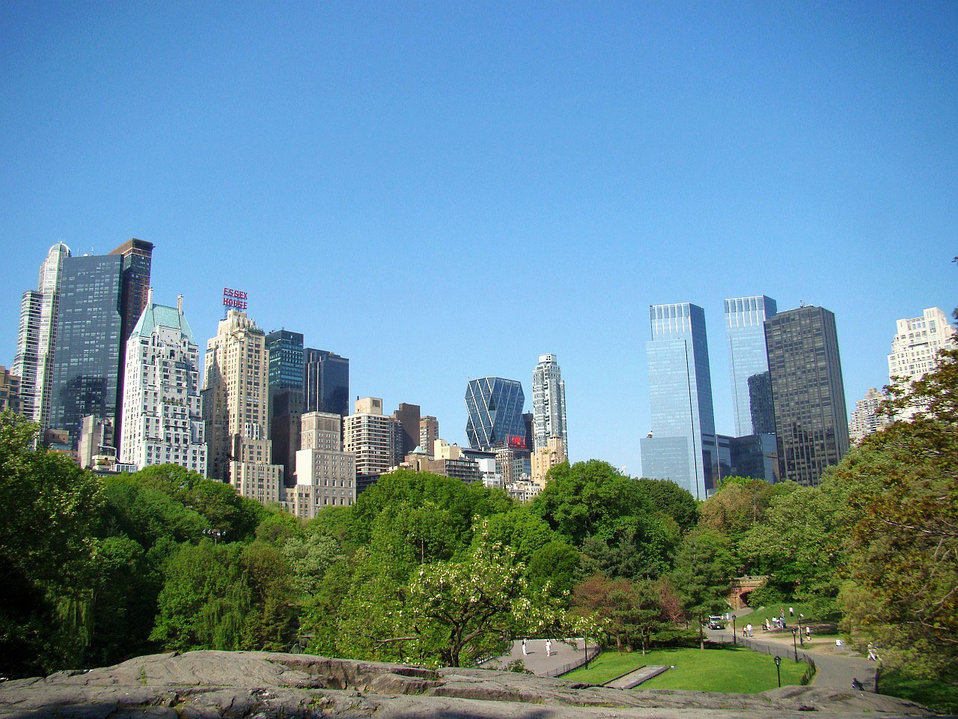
In central park

Beautiful sunny day in the park.